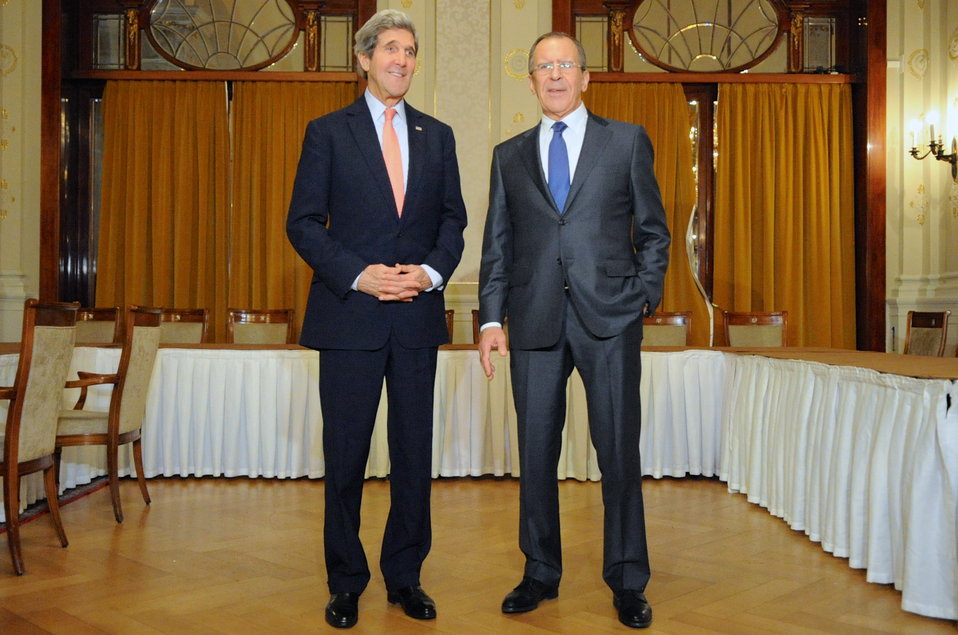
Secretary Kerry Meets With Russian Foreign Minister Lavrov at Outset of Syria Meeting

U.S. Secretary of State John Kerry chats with Russian Foreign Minister Sergey Lavrov on January 21, 2014, in Montreux, Switzerland, at the outset of meetings focused on reaching a negotiated political settlement in Syria.